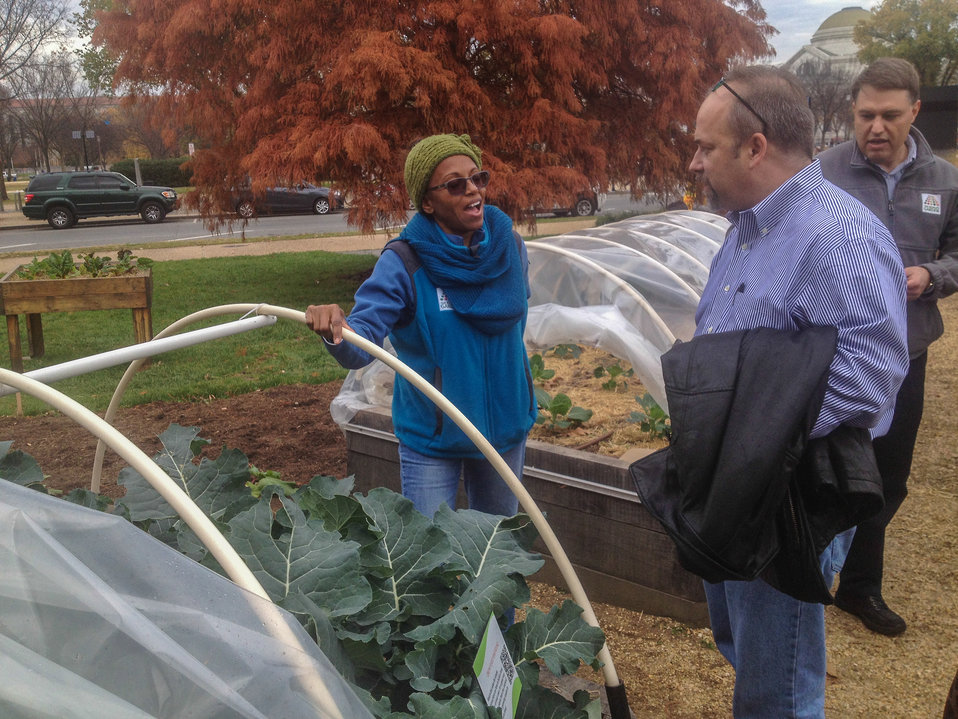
U.S. Department of Agriculture (USDA) People's Garden Project Manager Leslie Burks, left, and Plant Specialist John Englert, far right, talk to visitors at the USDA headquarters' People's Garden, about extended growing season and easy build benefits of Hoop Houses (plastic covered tunnels) as the U.S. Department of Agriculture (USDA) farmers market and Harvest Festival at the USDA Whitten Building east parking lot in Washington, DC, on Friday, November 22, 2013.